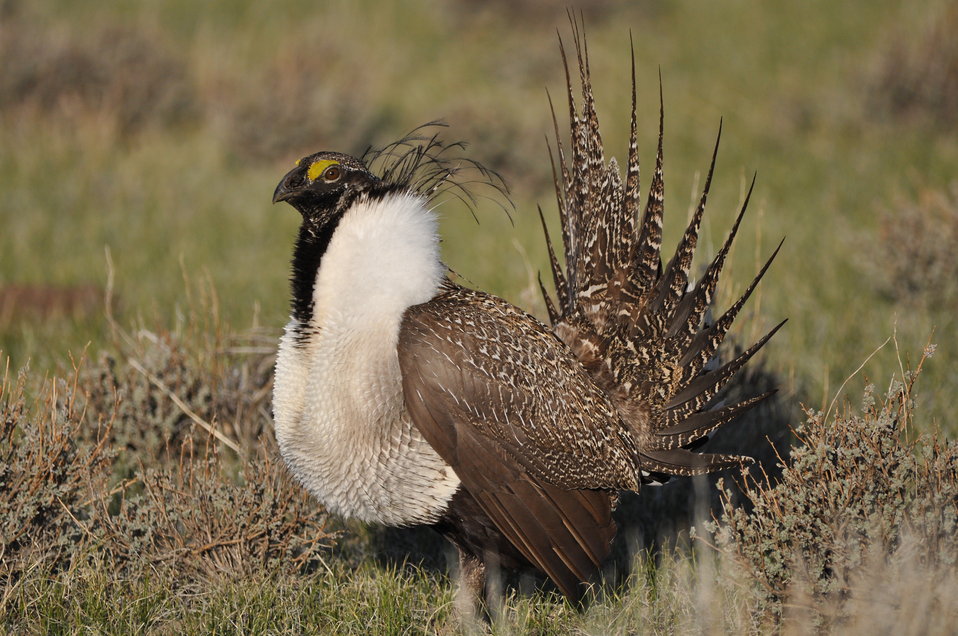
Greater Sage-Grouse

Photo Credit: Jeannie Stafford/USFWS
A greater sage-grouse male struts at a lek (dancing or mating ground) near Bridgeport, CA to attract a mate.